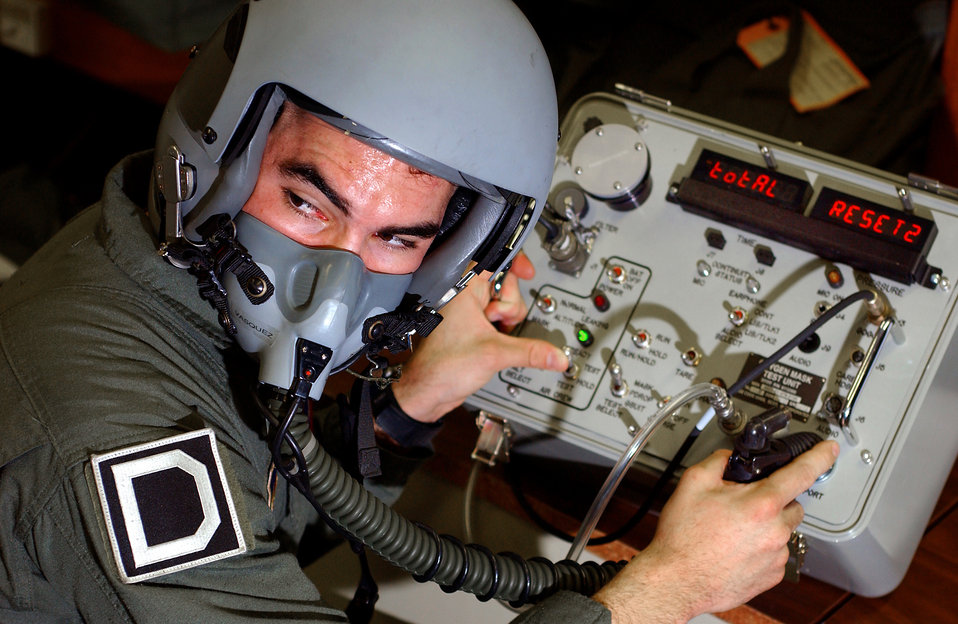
Good to go

ROYAL AIR FORCE FAIRFORD, England -- Airman 1st Class Eric Vasquez tests the seal on his helmet before a six-and-a-half-hour refueling mission. Airman Vasquez is a boom operator with the 351st Air Refueling Squadron at Royal Air Force Mildenhall, England. The squadron will fly from here while Mildenhall's runway is being repaired.